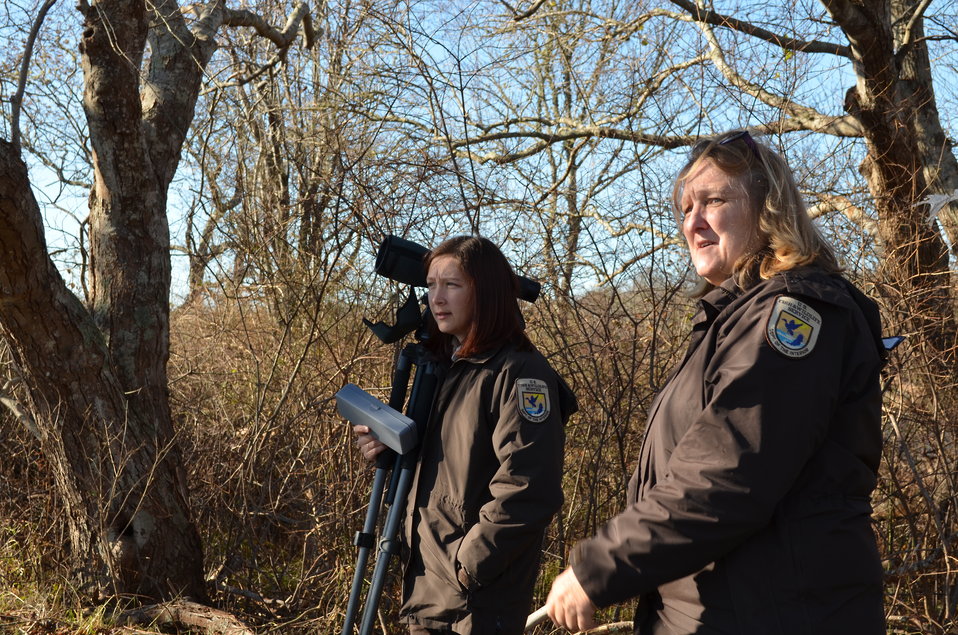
Refuge staff viewing Trustom Pond (RI)

Wildlife biologist Rhonda Smith (left) with outdoor recreation planner Janis Nepshinsky (right), both staff from the Rhode Island National Wildlife Refuge Complex.